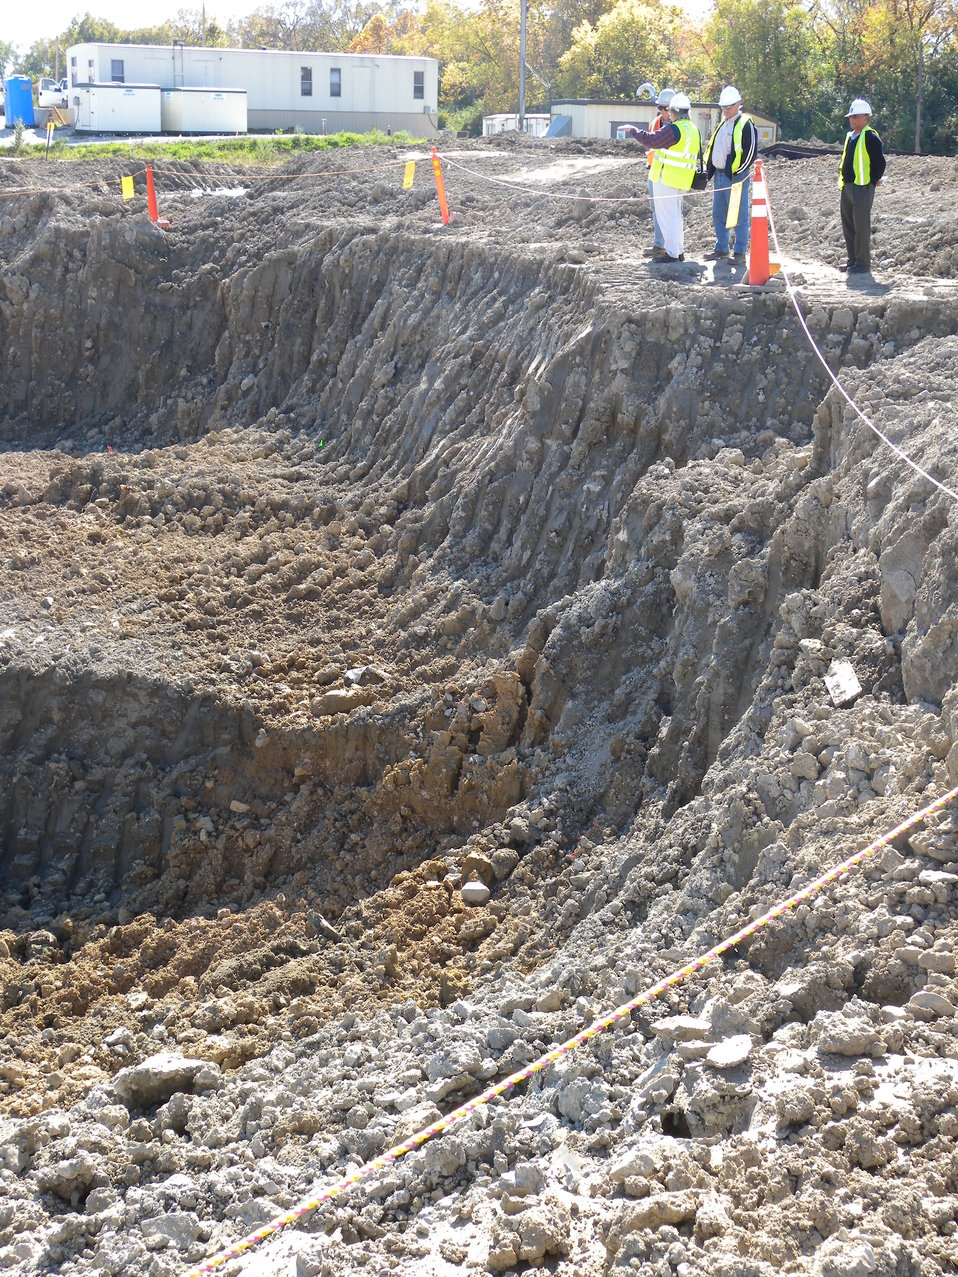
Recovery Act Project Brings End to Mound Site Cleanup Activities

The Recovery Act invested $17.9 million in the completion of EM’s legacy cleanup activities at the Mound Site in 2010.
Recovery Act workers disposed nearly 20,000 cubic meters of soil and demolition debris in the cleanup, which focused on the Operable Unit-1, a former mixed-waste landfill at the 306-acre site. The Recovery Act cleanup was the final remediation project at Mound.
The federal government is in the process of transferring ownership of the site to the Mound Development Corporation, a community reuse organization.